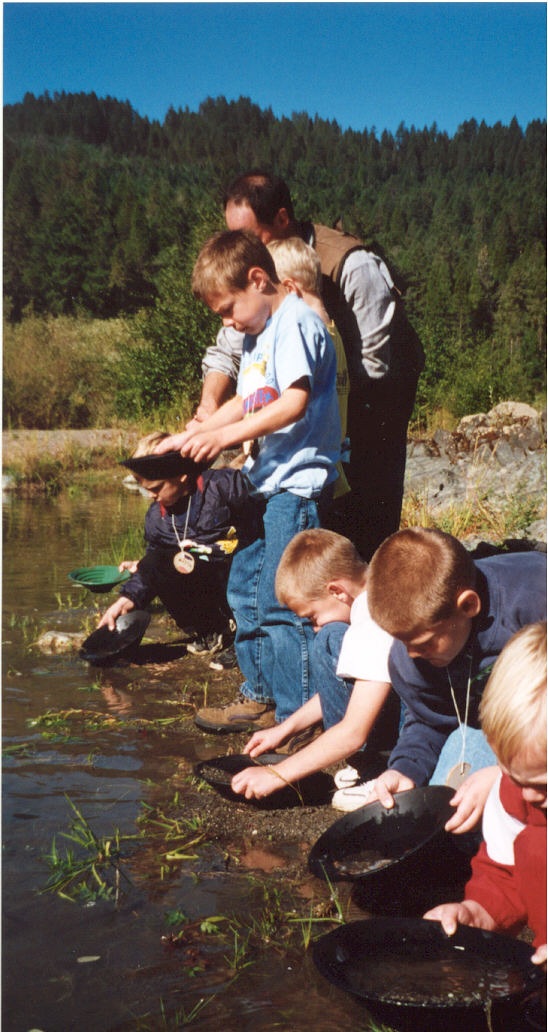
Public Lands Day goldpanning demonstration.